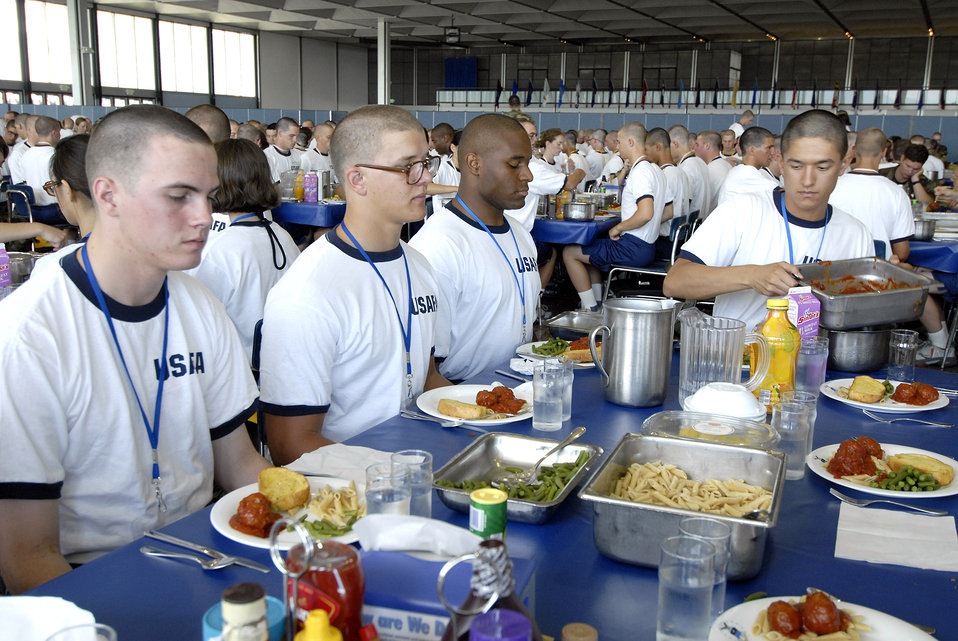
Eyes on the eagle

Basic cadet trainees prepare for their first lunch since arriving as the Class of 2011 June 29 at the U.S. Air Force Academy in Colorado. The cadets are in their first week of training and must not take their eyes off the eagle on their plate as they eat. They are in the first half of basic cadet training, commonly known as